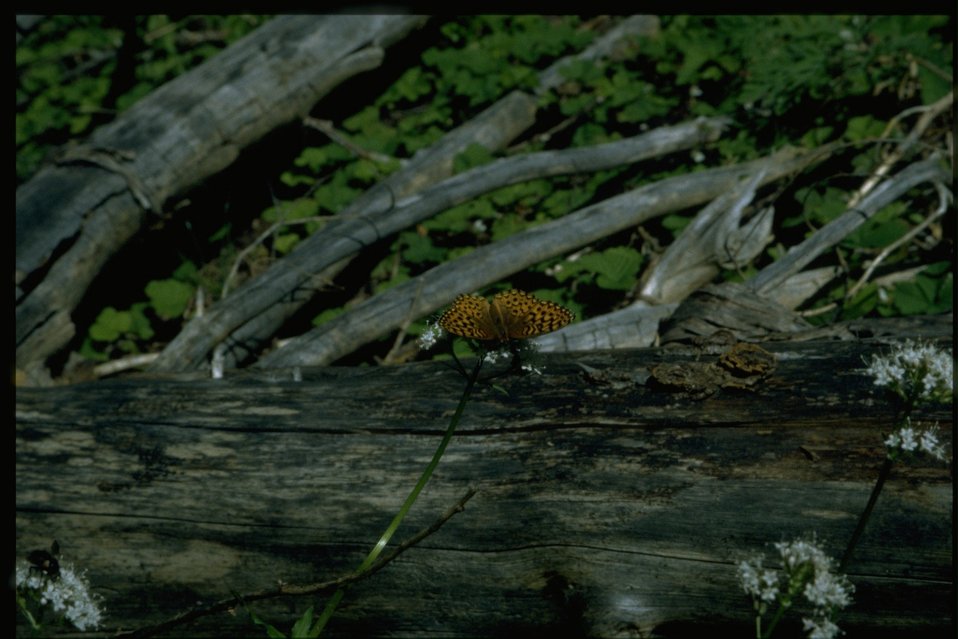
Farshot of butterfly and Valeriana sitchensis.